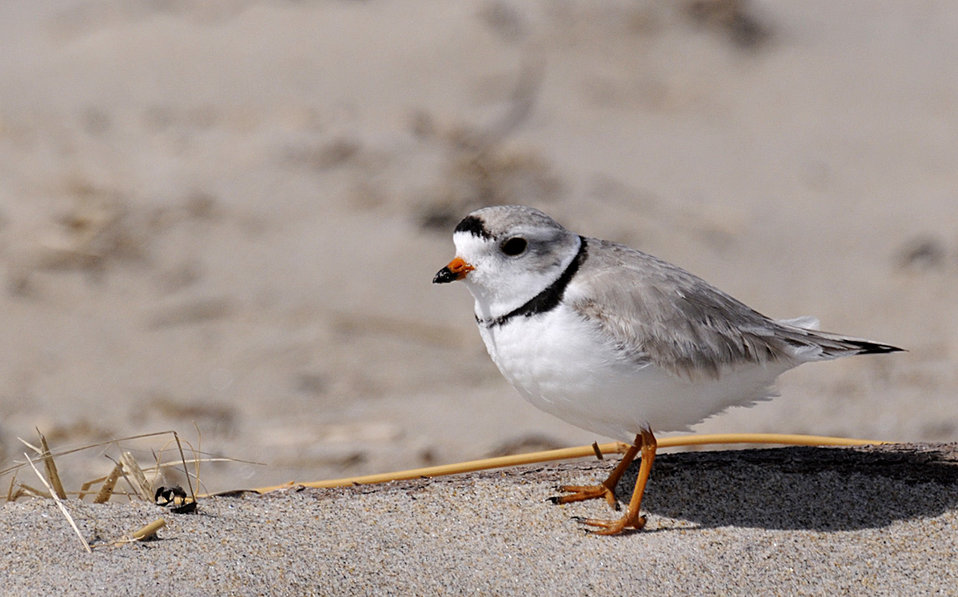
Piping plover

Parker River National Wildlife Refuge, MA.